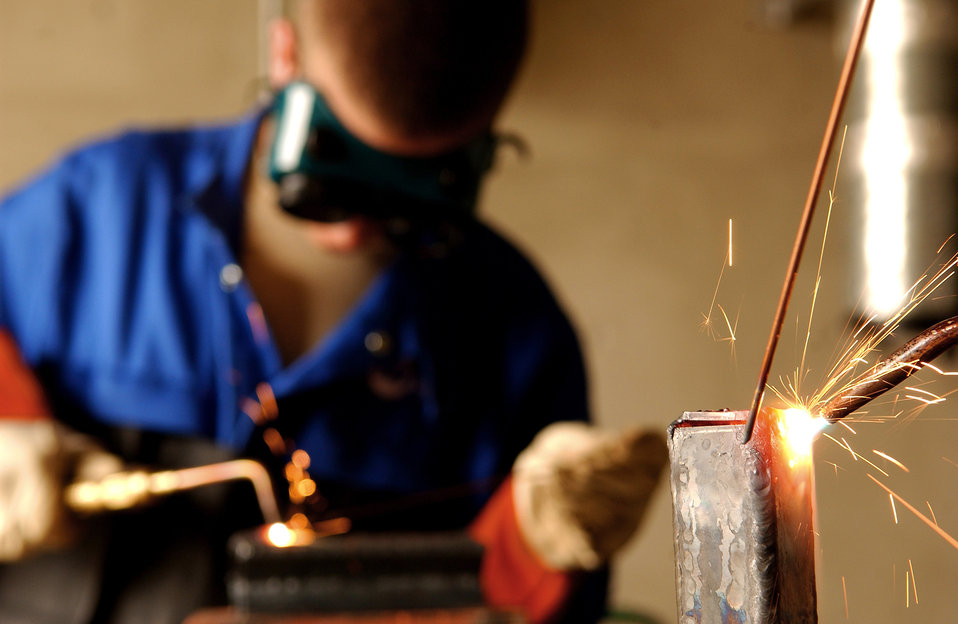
Merger provides Airmen chance to ?weld? new skills

Airmen and local nationals practice shielded metal arc welding June 4 at Kadena Air Base, Japan. Personnel from vehicle mechanics and body shop are completing a newly implemented welding course at the Pacific Air Forces Transportation Training Center.